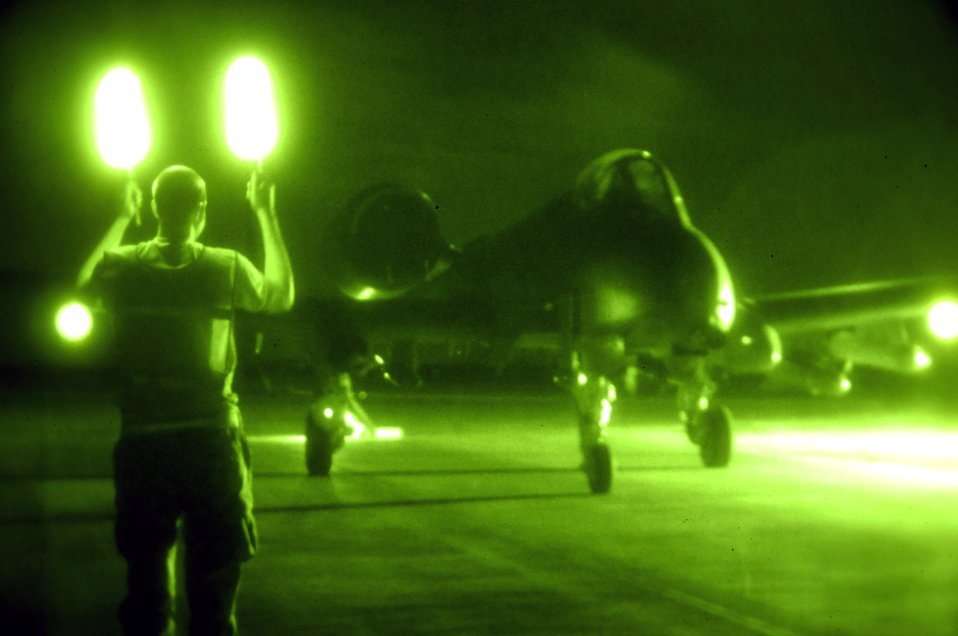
Upgraded A-10s prove worth in Iraq

Senior Airman Daniel Young marshals in an A-10 Thunderbolt II for munitions disarming after an Oct. 28 mission at Al Asad Air Base, Iraq. The A-10C's are assigned to the 104th Expeditionary Fighter Squadron, which is made up primarily of members from the 175th Maryland Air National Guard. Airman Young is a Maryland Air National Guard crew chief. The 104th EFS is the first unit to use the C-model A-10 in a combat zone. Its upgrades have made air power more efficient and have streamlined the close-air-support mission.